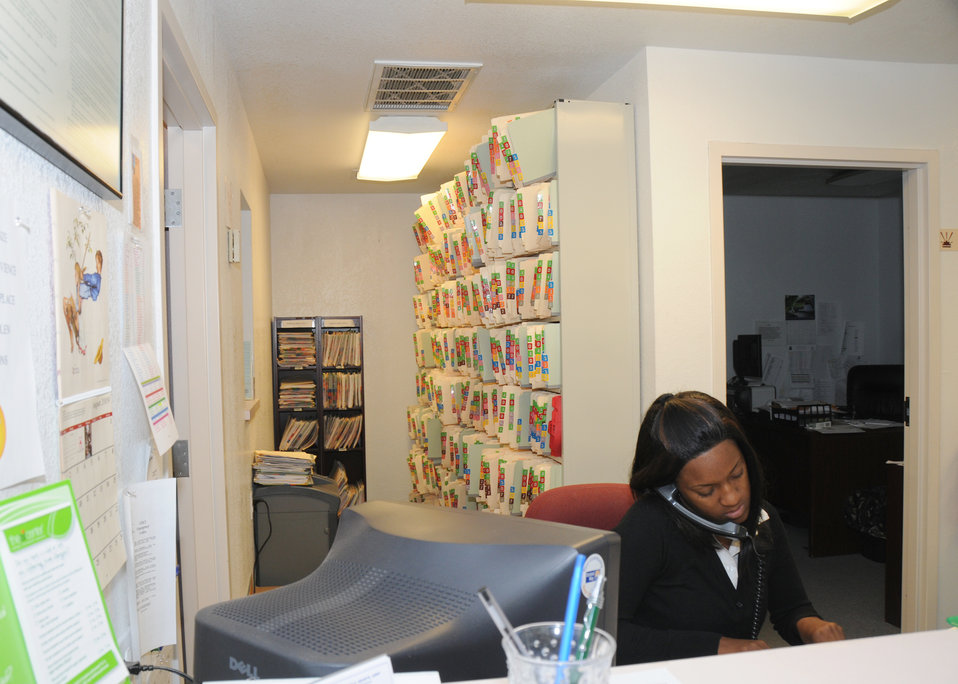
Receptionist at Mary Mahoney Health Center in Langston, OK.